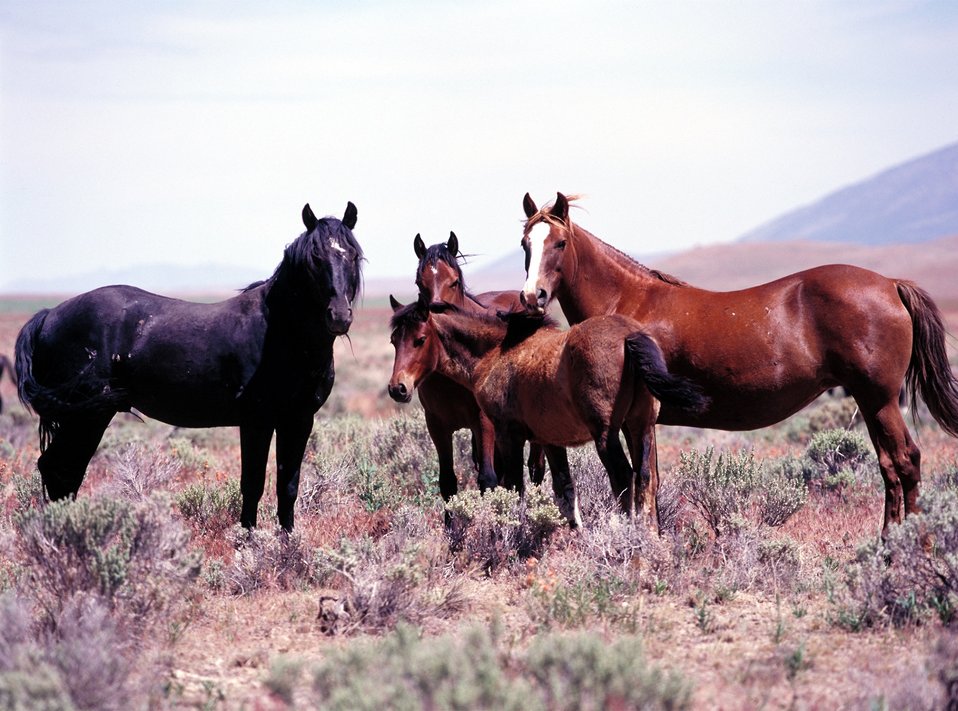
Onaqui Herd near Dugway, Utah.